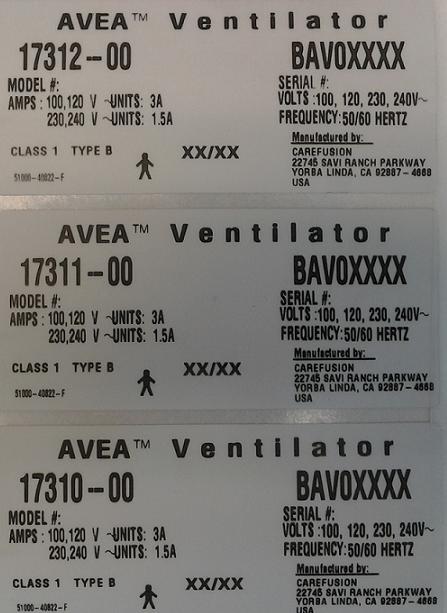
RECALLED - AVEA Ventilators

December 22, 2011 - CareFusion Provides Update on Previously Announced Ventilator Recall.